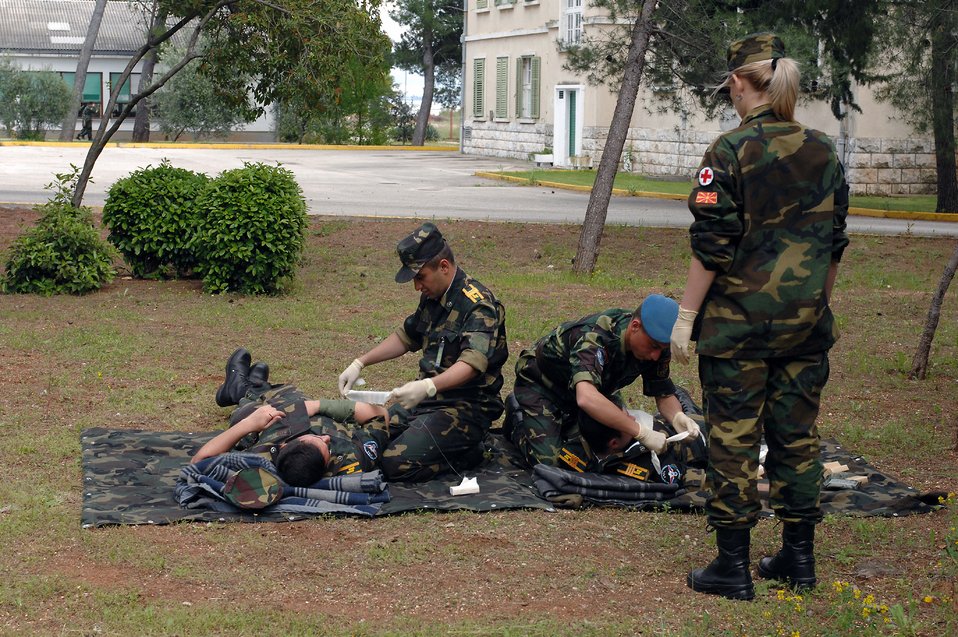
Medical training exercise supports partnership for peace

Macedonian Army Sgt. Milena Velickovska observes cadets from the Military Medicine Faculty of the Armenian Medical University as they treat each other using Self-Aid and Buddy Care May 3 during the 2008 Medical Training Exercise in Central and Eastern Europe. Fifteen nations are participating in the exercise from May 2 through 14.